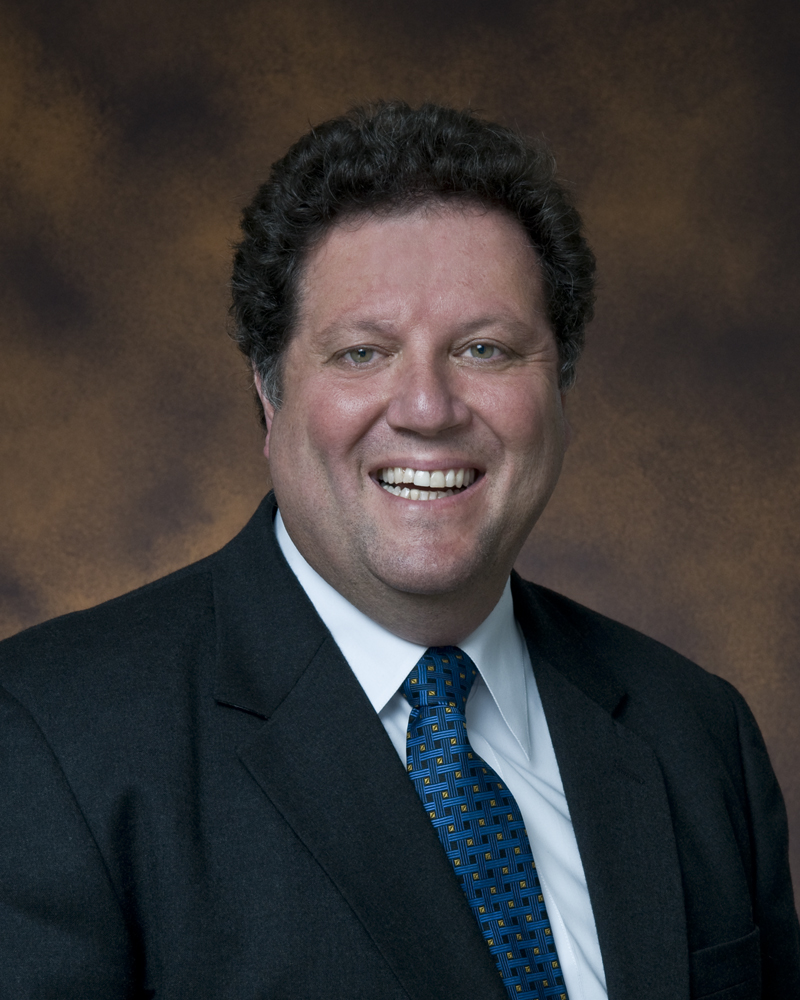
ARPA-E Principal Deputy Director Eric Toone